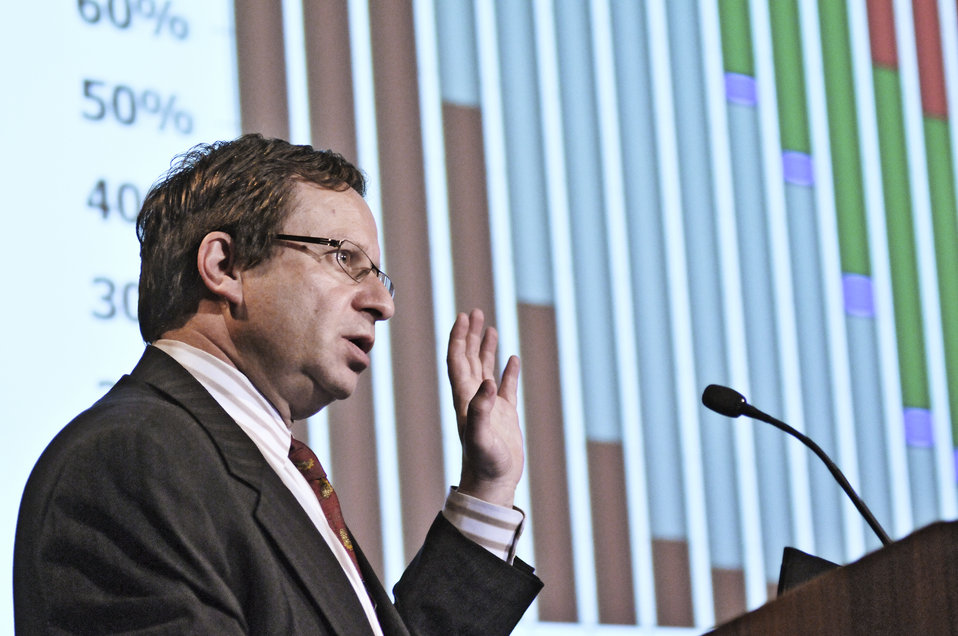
Dr. Steve Koonin releases the results of the the Department of Energy's Quadrennial Technology Review.